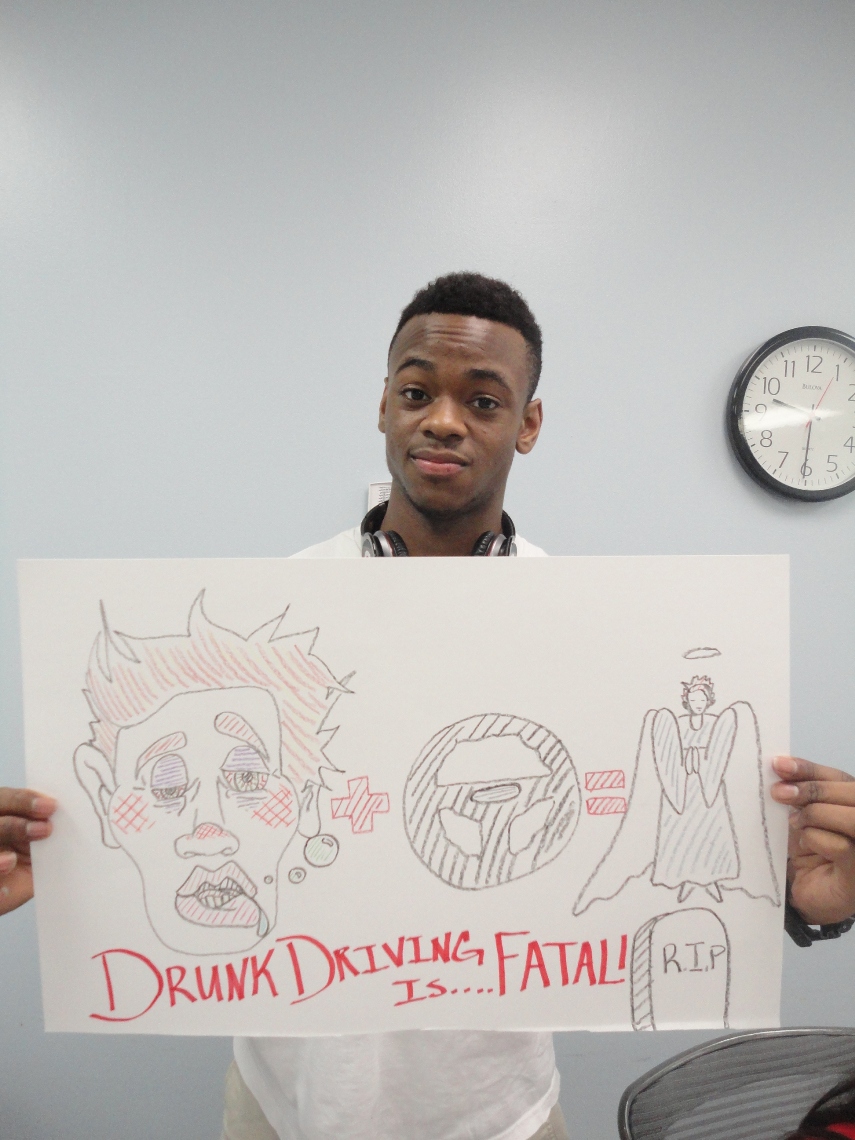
DREAM's, MS Student Advisory Board of Youth Highway Safety NDFW 2013

Mississippi High School Students participate in NDFW 2013 events.